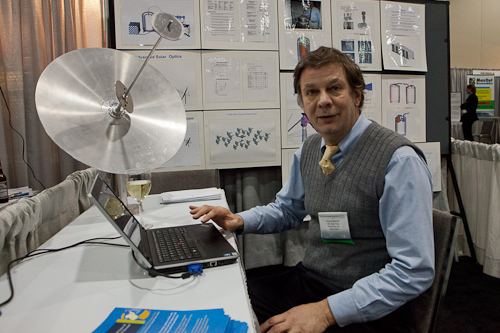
ADI's 24/7 Solar Storage Solution

ADI Solar's revolutionary high-temperature chemical storage solution provides dispatchable energy using the chemical energy stored in calcium hydride. Calcium and hydrogen provide a thermally reversible high temperature storage solution using the heat of formation in calcium hydride.